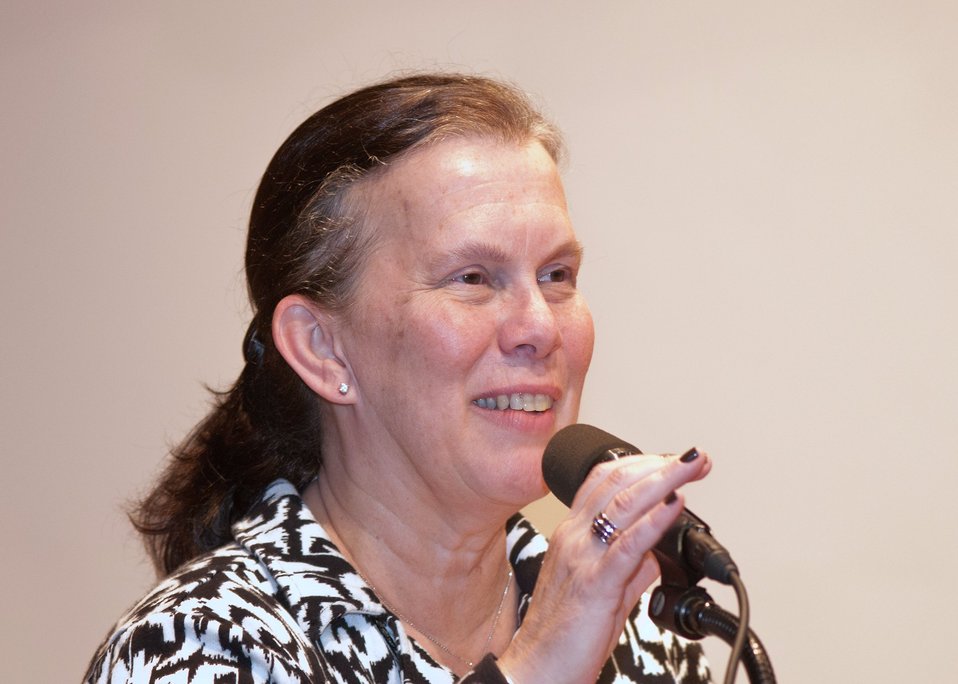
Janie Hipp, Senior Advisor to the Secretary, Office of Tribal Relations welcomes employees to the Native American Indian Heritage Month celebration at the United States Department of Agriculture in Washington, DC, on Wednesday, November 16, 2011. The theme of this year’s event is, “Native Youth: Cultivating the Future.”